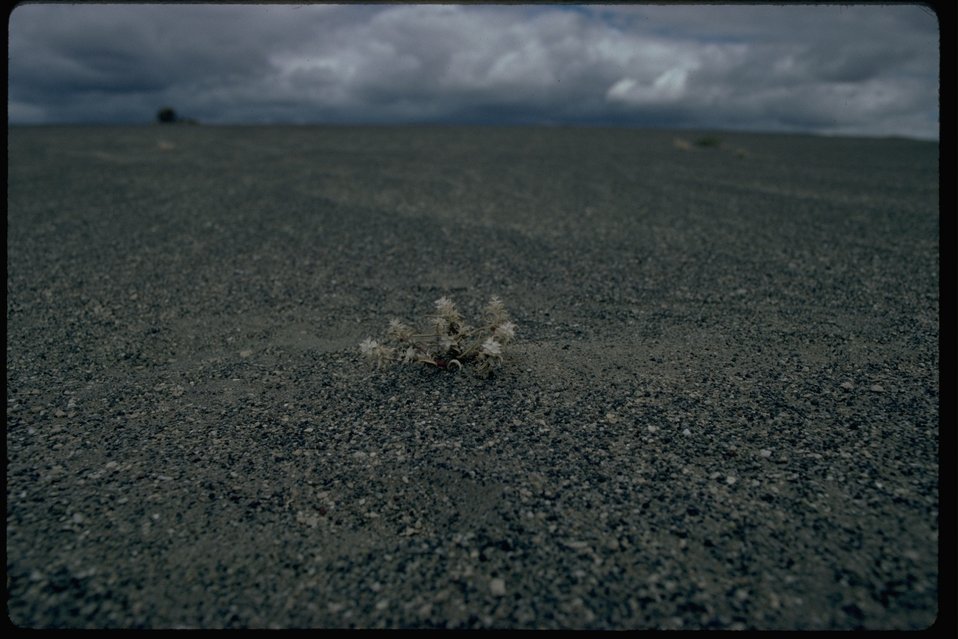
Sand Dunes Wilderness Study Area. OR 1-24